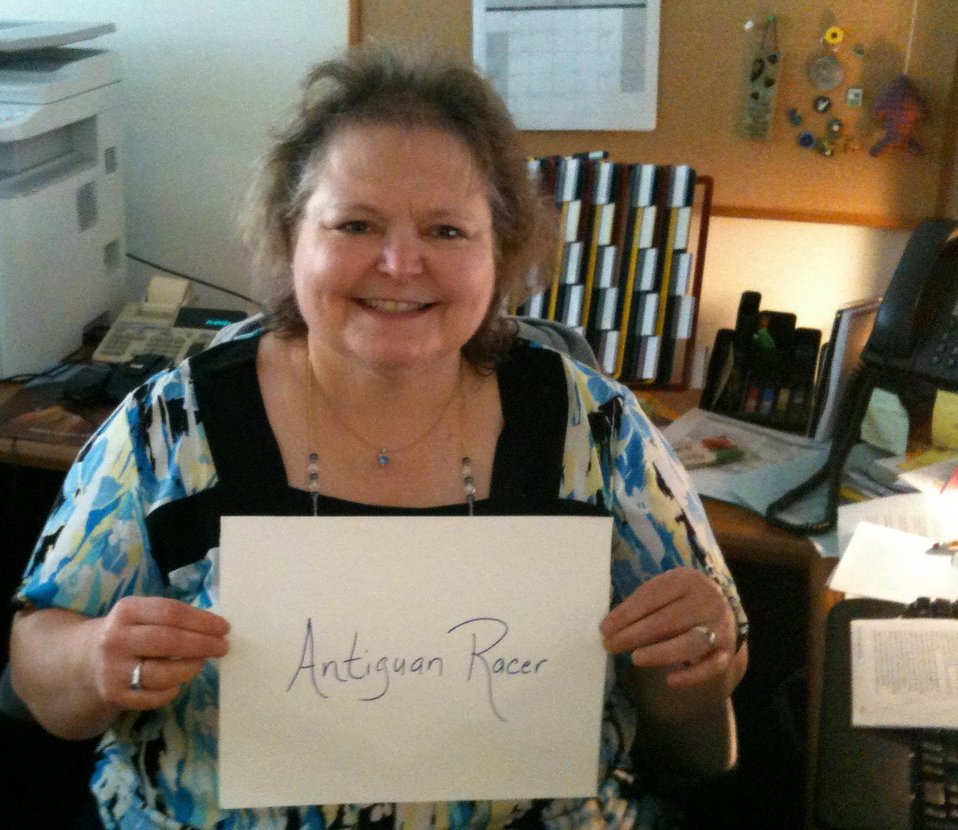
Holly Robinson, 'Antiguan Racer,'

International Affairs participates in FFI's In Our Hands campaign